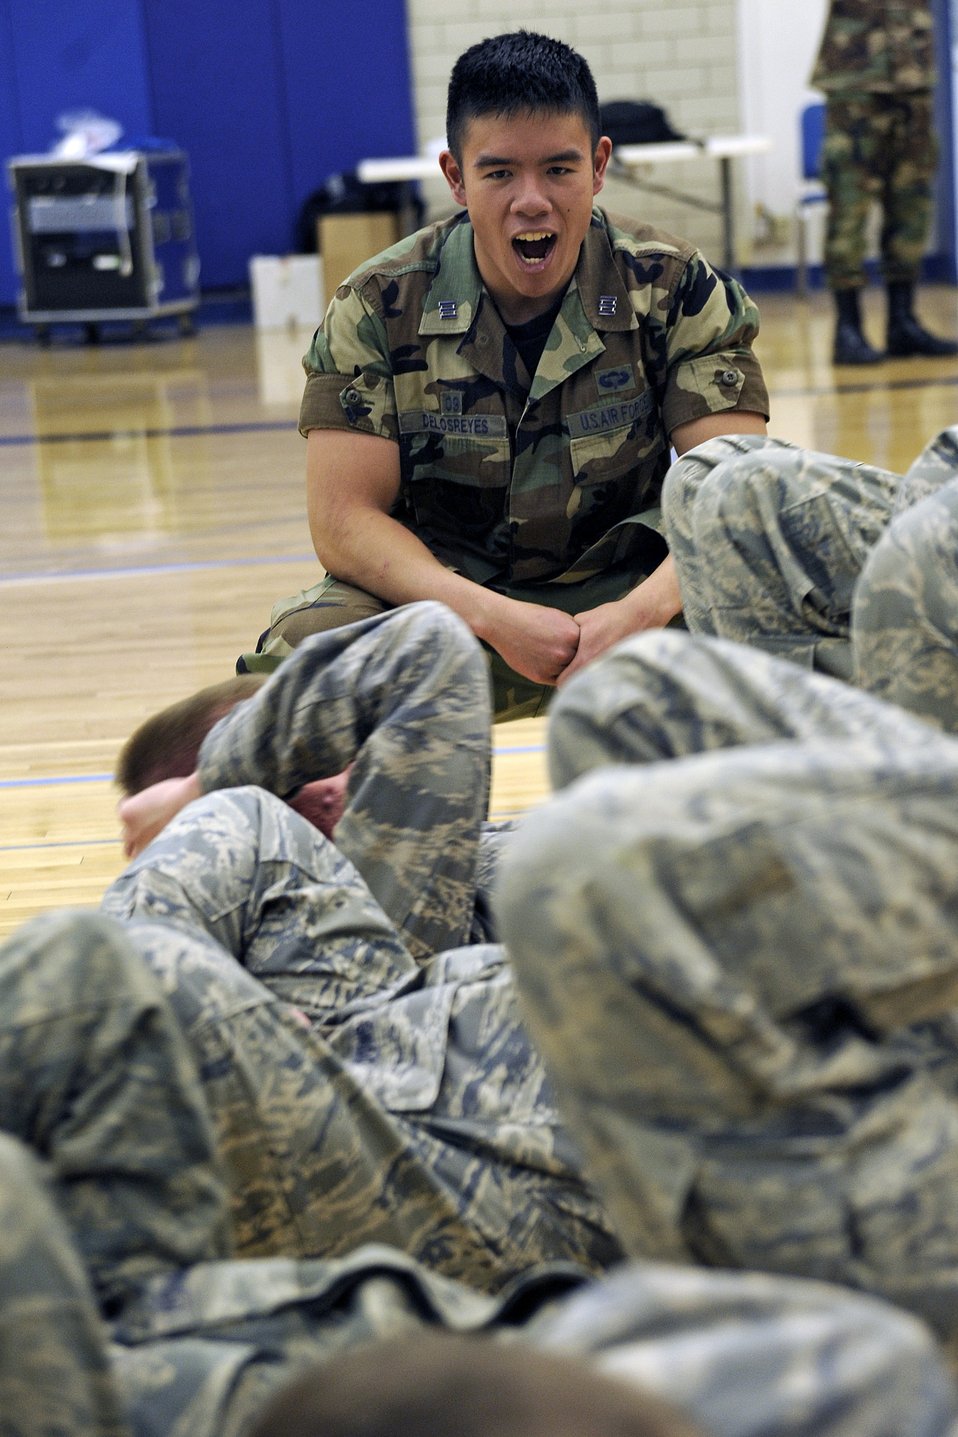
US Air Force Academy, CO

Cadet 1st Class John Delosreyes motivates fourth-class cadets performing crunches on the chutes and ladders course during Recognition. Recognition marks the transition of the fourth classmen to upper class status. It is the ceremonial acknowledgement that the fourth class has successfully met the training requirements expected of it, and is prepared to continue its four-year journey through the Academy.